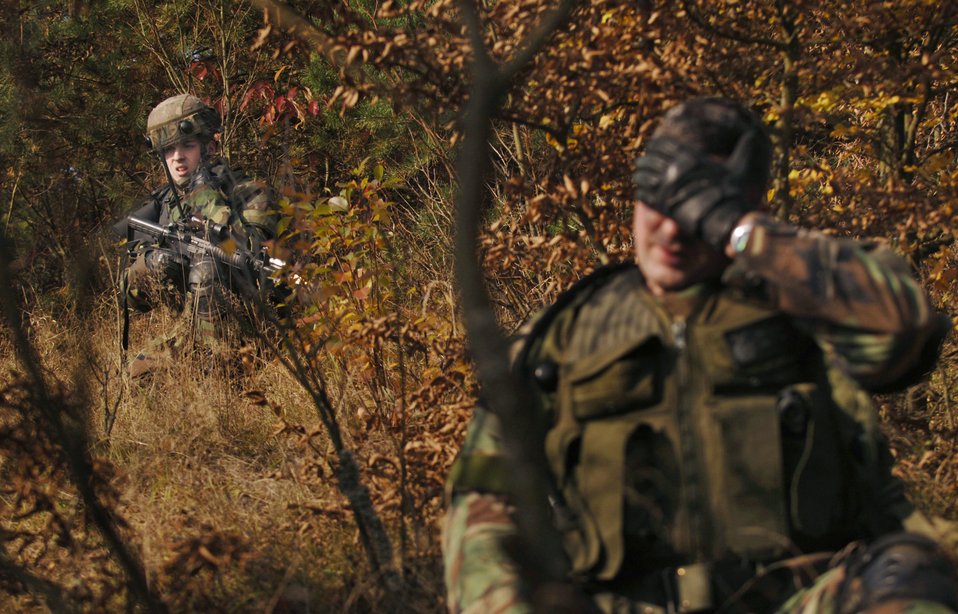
Creek Defender

As the sole survivor of a simulated fire fight, Airman 1st Class Stephan Argyro (left) waits for Creek Defender instructors to evaluate the convoy patrol scenario that